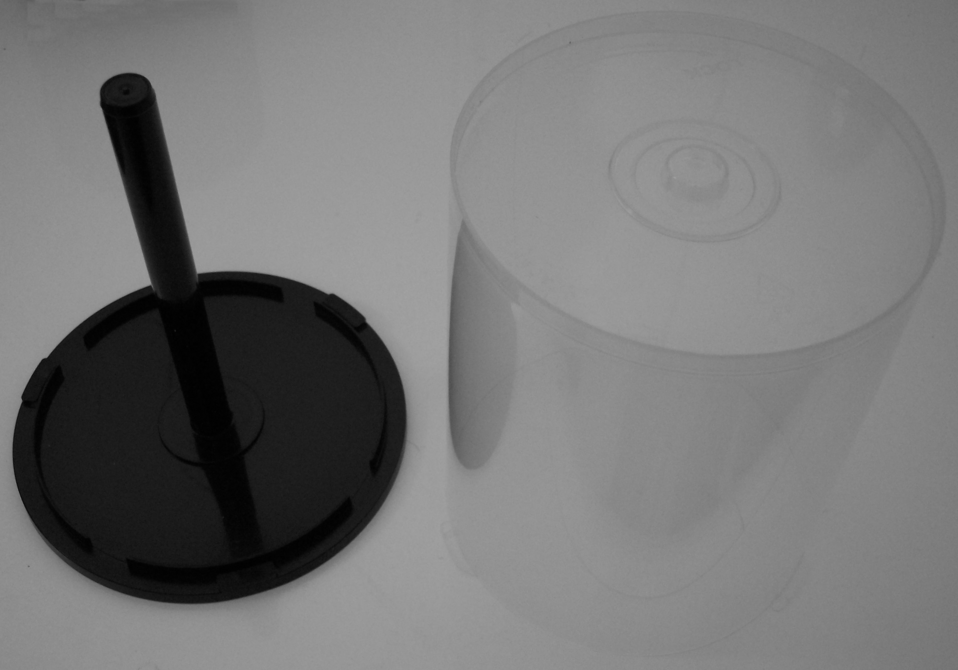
100er offen